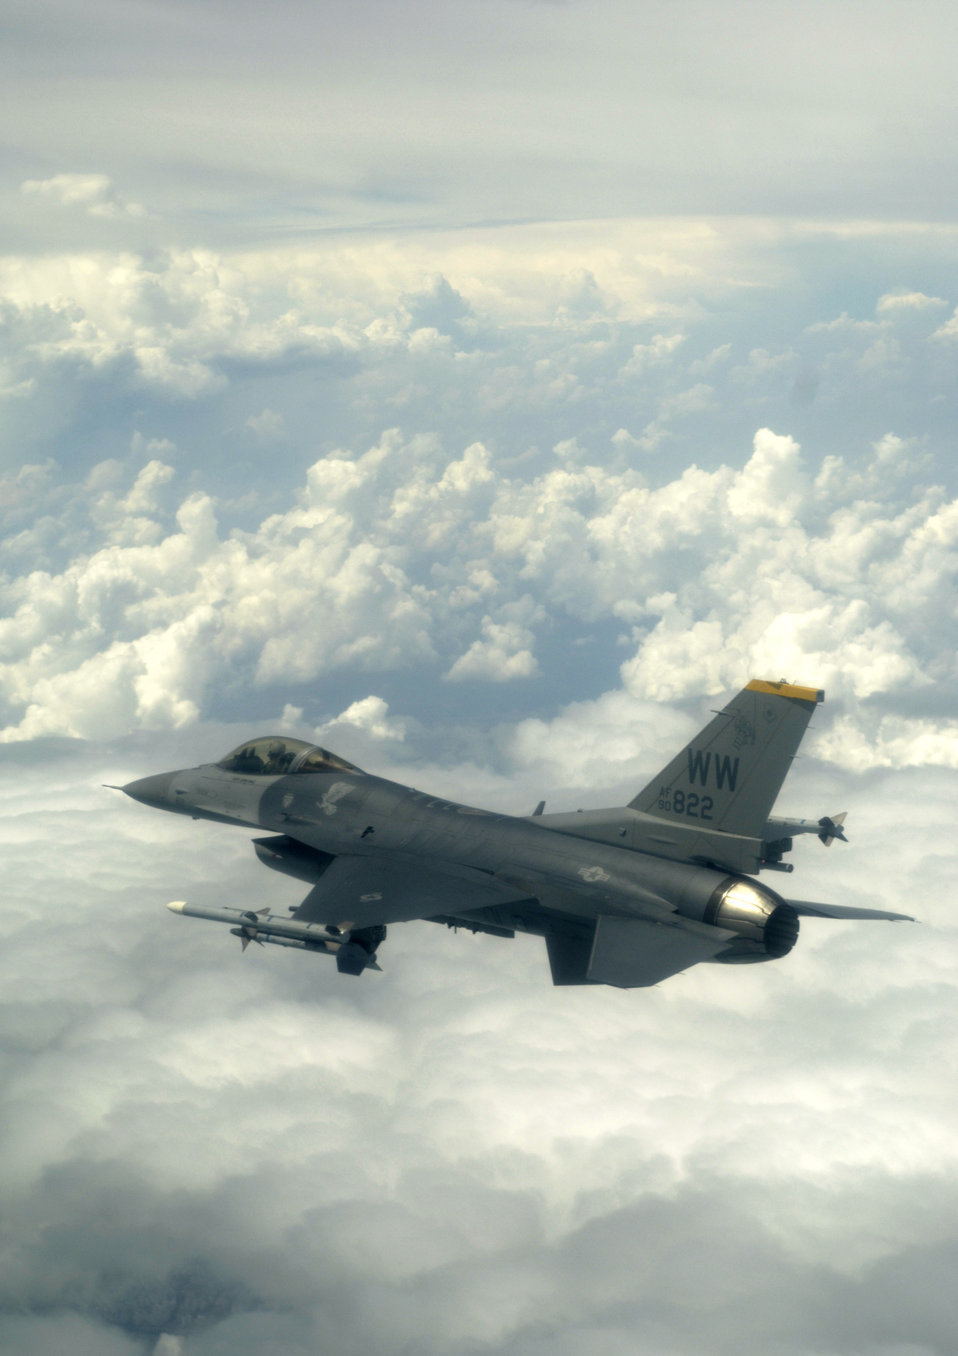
Commando Sling

An F-16 Fighting Falcon from the 14th Fighter Squadron, 35th Fighter Wing, Misawa, Japan, finishes a mission in the sky over the South China Sea during Exercise Commando Sling. The annual exercise began in 1990 to provide combined air combat training for U.S. Air Force and Singapore Air Force fighter units.